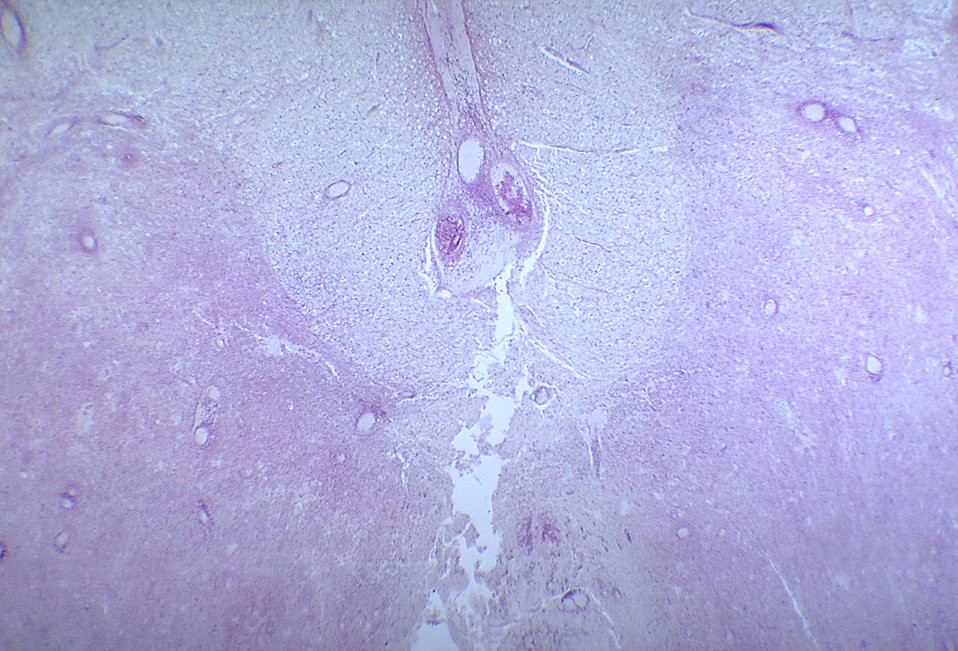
A photomicrograph of the lumbar spinal cord depicting degenerative changes due to an infarct caused by Polio Type III.